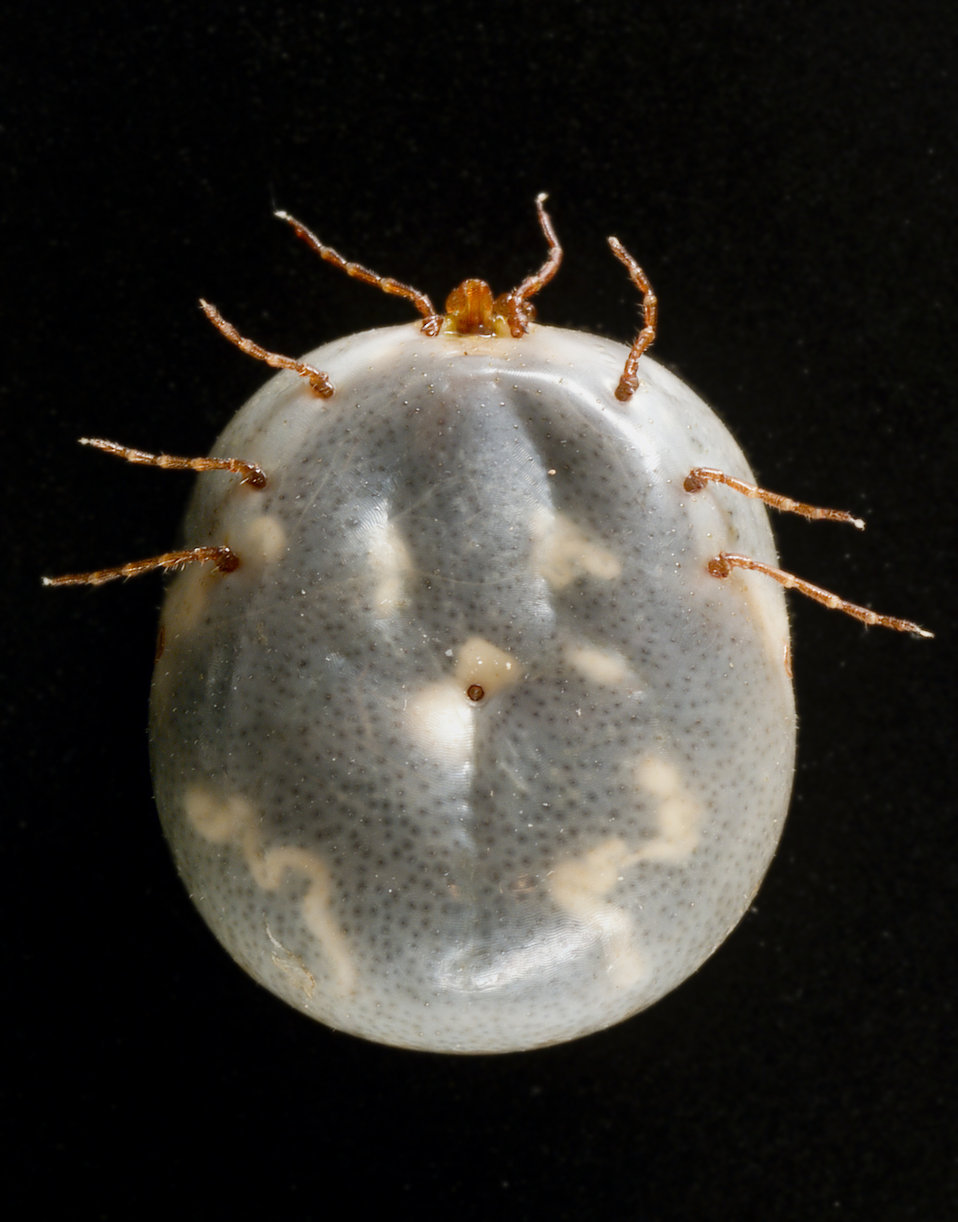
This photograph depicted ventral view of an engorged female "lone star tick" Amblyomma americanum. An Ixodes or "hard" tick, A. americanum is found through the southeast and south-central states, and has been shown to transmit the spirochete, Borrelia lonestari, the pathogen responsible for causing a Lyme disease-like rash known as "Southern tick-associated rash illness" (STARI). Representatives from all three of its life stages aggressively bite people in the southern U.S.